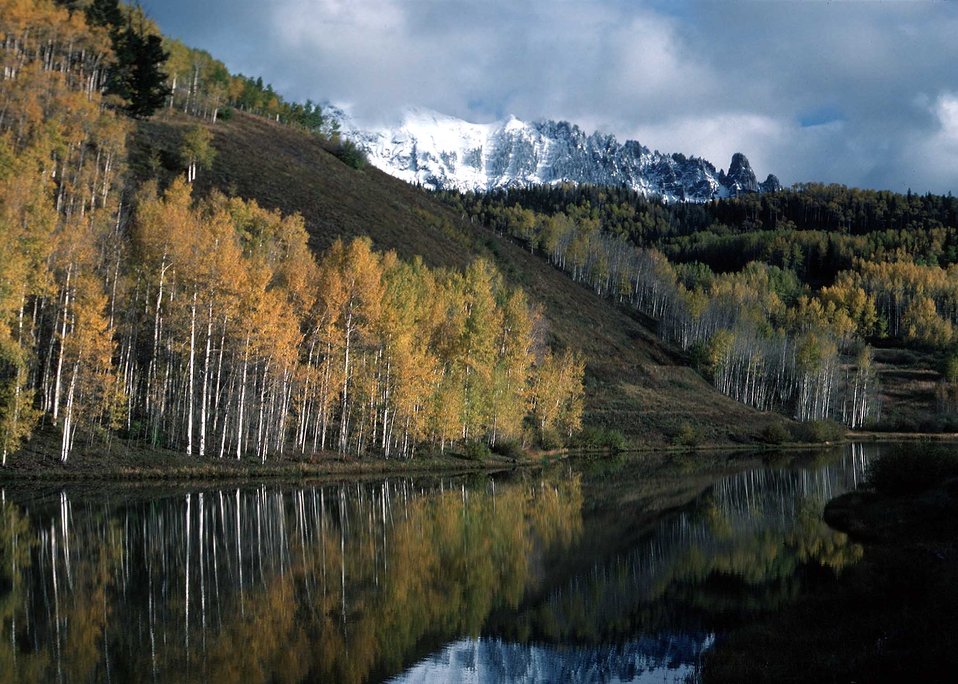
A fall mountain and lake landscape

Aspens in fall color in Uncompahare National Forest.